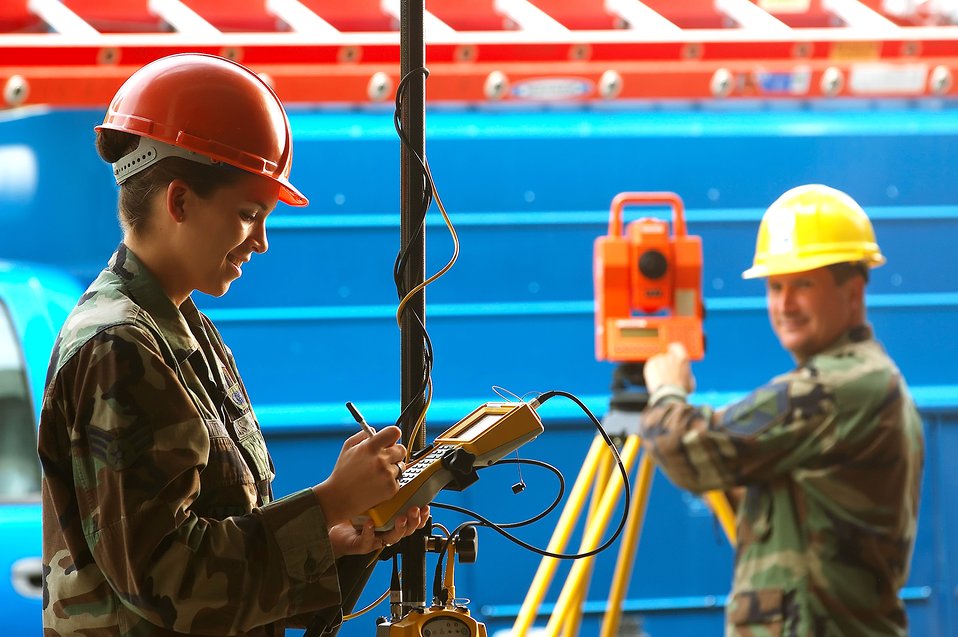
Checkin' things out

BURLINGTON, Vt. -- Senior Airmen Anja Bittner (left) and Senior Master Sgt. John Talcott get a firsthand look at the 158th Civil Engineer Unit's new Geodimeter 600 and Trimble 5700 global positioning system survey equipment. The Airmen are assigned to the Vermont Air National Guard.